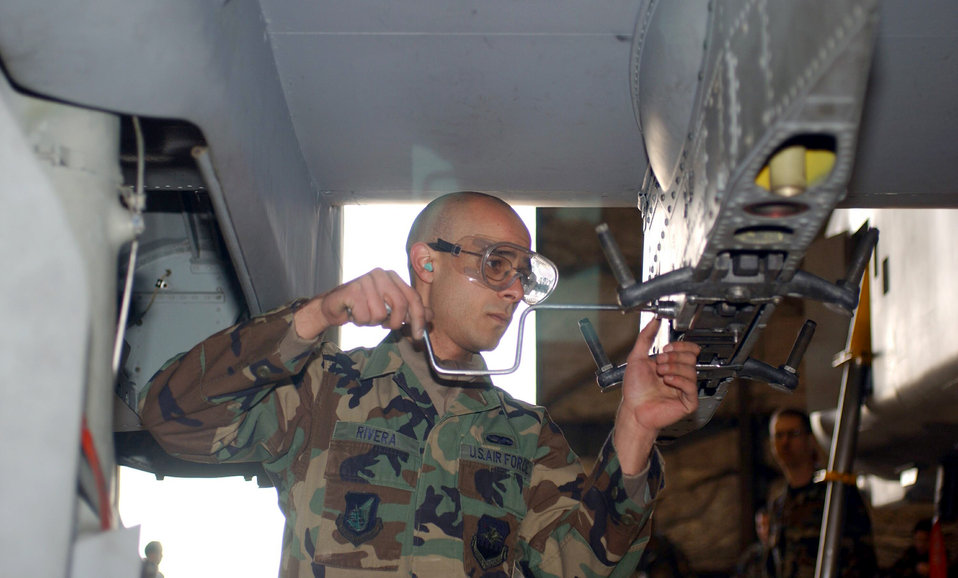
A lot of loading

OSAN AIR BASE, South Korea -- Senior Airman Jose Rivera uses a speed handle to prepare an A-10 Thunderbolt II pylon for loading a bomb here recently. He is assigned to the 51st Aircraft Maintenance Squadron.